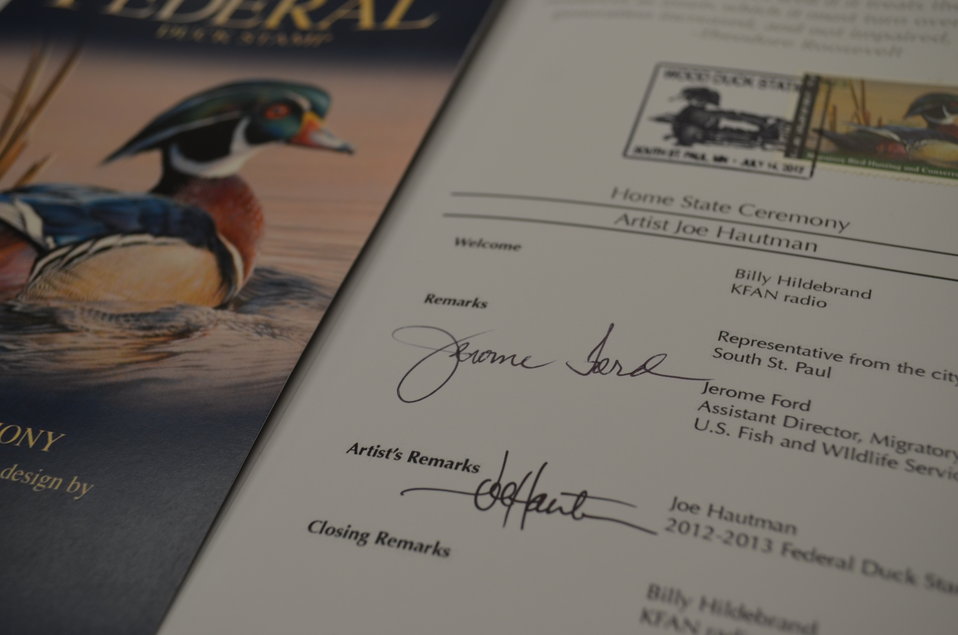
Federal Duck Stamp artist Joe Hautman and Jerome Ford, Assistant Director of Migratory Birds and Wildlife and Sport Fish Restoration Programs with the Service, sign copies of the 2012 Federal Duck Stamp Home State Ceremony program.